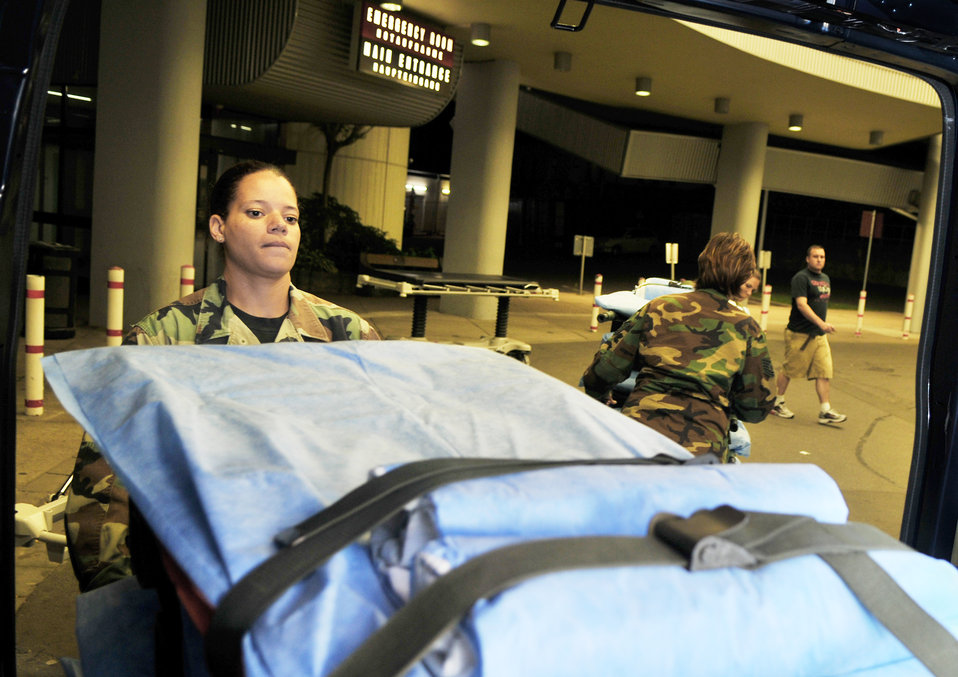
Aeromedical staging facility staff to reach major milestone in warrior care

Tech. Sgt. Laura Small unloads gurneys Aug. 27, 2009, at Landstuhl Regional Medical Center in Germany. The gurneys will be used to transport wounded warriors to an aircraft taking them to Walter Reid Medical Center in Washington, D.C., for further medical treatment. Sergeant Small is a 86th Contingency Aeromedical Staging Facility medical technician.